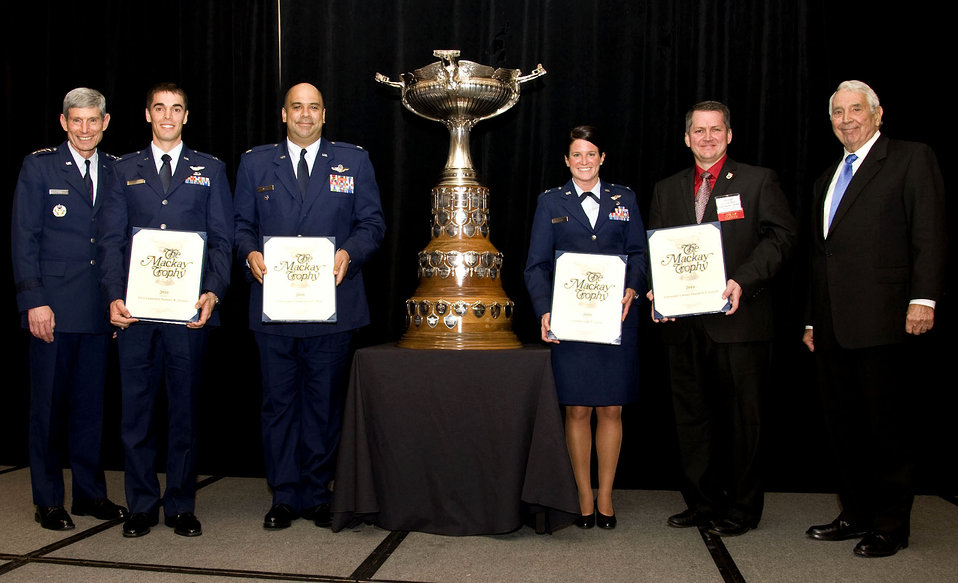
2011 MacKay trophy award

(From left) Air Force Chief of Staff Gen. Norton Schwartz, Capt. Nicholas Tsougas, Lt. Col. Dylan Wells, Capt. Leigh Larkin, retired Lt. Col. Donald Cornwell and National Aeronautic Association Chairman Walter Boyne pose for a photo during the NAA’s annual fall awards dinner Nov. 7, 2011, in Arlington, Va. Schwartz and Boyne presented the Airmen with the Mackay Trophy, awarded annually for the most meritorious Air Force flight of the year. The four were part of an F-15E Strike Eagle combat mission credited with killing more than 80 Taliban insurgents and saving approximately 30 coalition troops April 6, 2010.